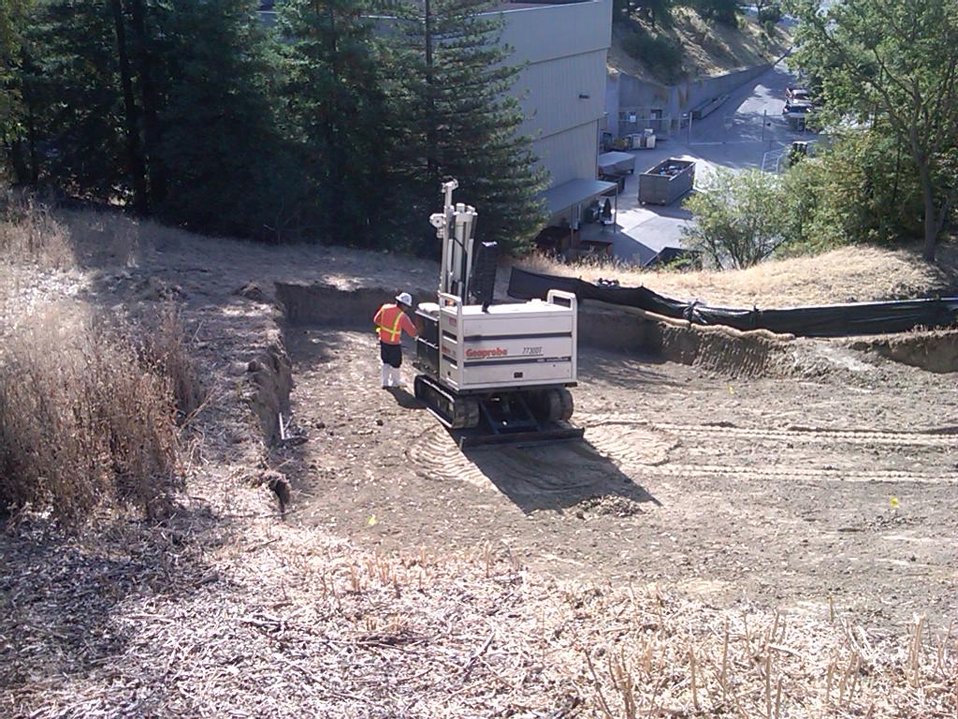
Recovery Act Supports Soil and Debris Cleanup, Groundwater Treatment at SLAC

Recovery Act workers are on track to remove more than 30,000 cubic yards of contaminated soil and debris at the SLAC National Accelerator Laboratory by September 2011.
The Recovery Act invested $14.3 million in legacy cleanup activities at SLAC. In addition to removing contaminated soil and debris that is shipped to local disposal facilities, Recovery Act workers installed three new groundwater treatment systems.